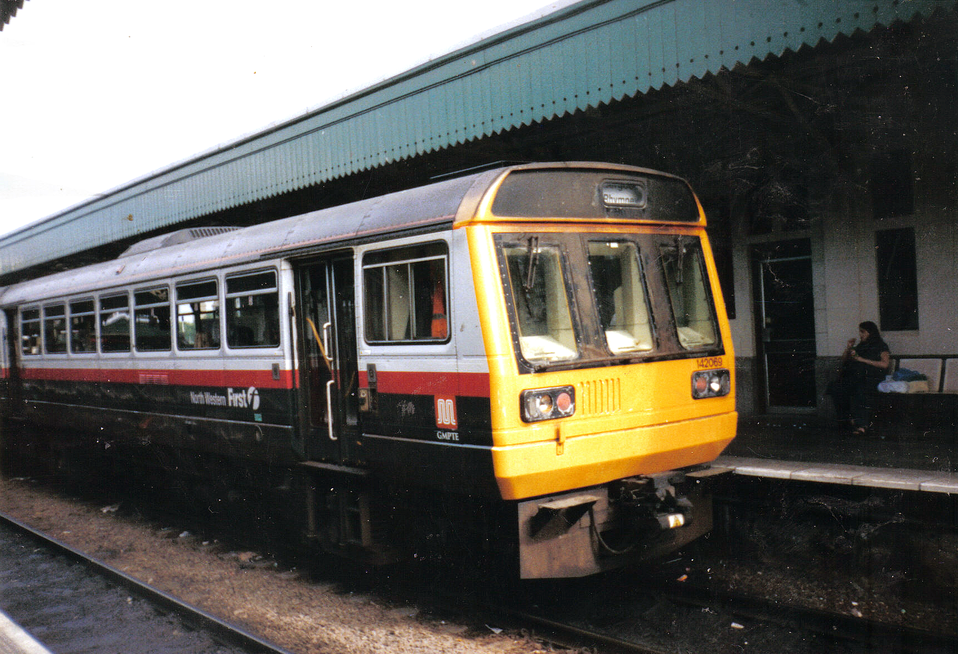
British Rail Class 142 GMPTE Pacer 142069 at Cardiff Central, farmed out to Valley Lines.